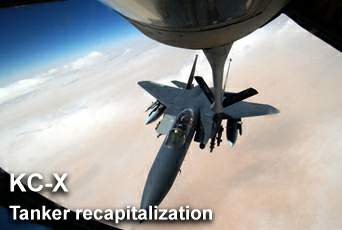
Tanker recapitalization proposal released

A request for proposal for a replacement tanker aircraft was released by Air Force leaders Jan. 30. The Air Force's No. 1 acquisition priority is a replacement for the KC-135.